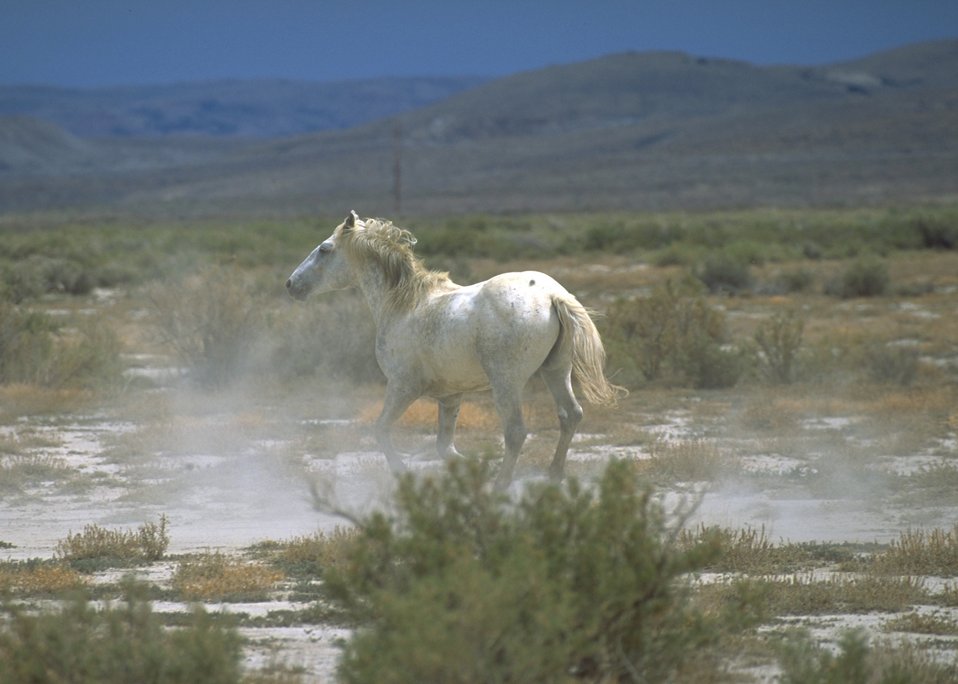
Wild horses, Rock Springs Field Office.